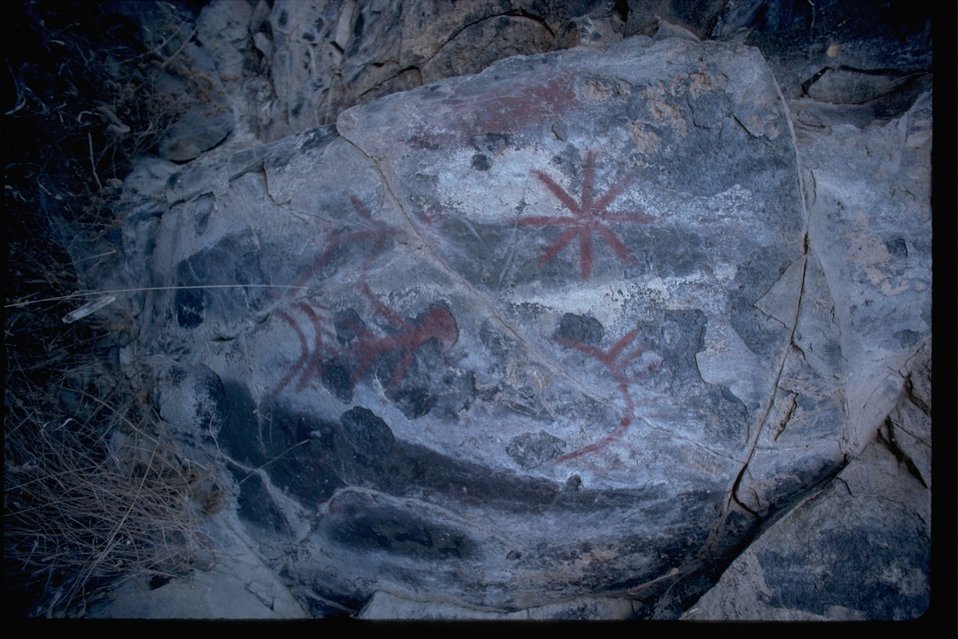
Rock Art found in Jackknife Canyon.